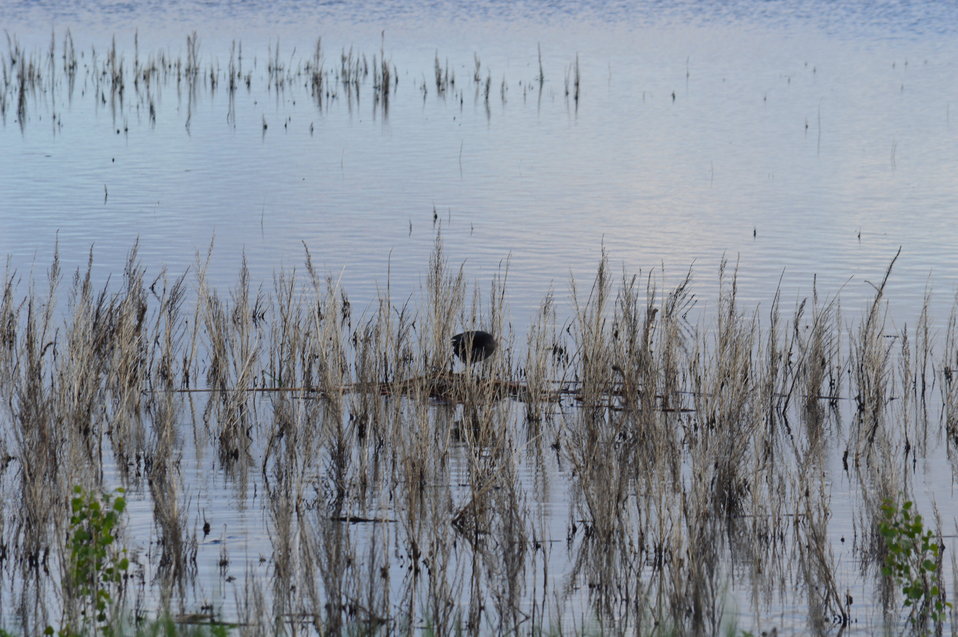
Nesting in Sand Lake

Scenery and wildlife at Sand Lake National Wildlife Refuge in South Dakota